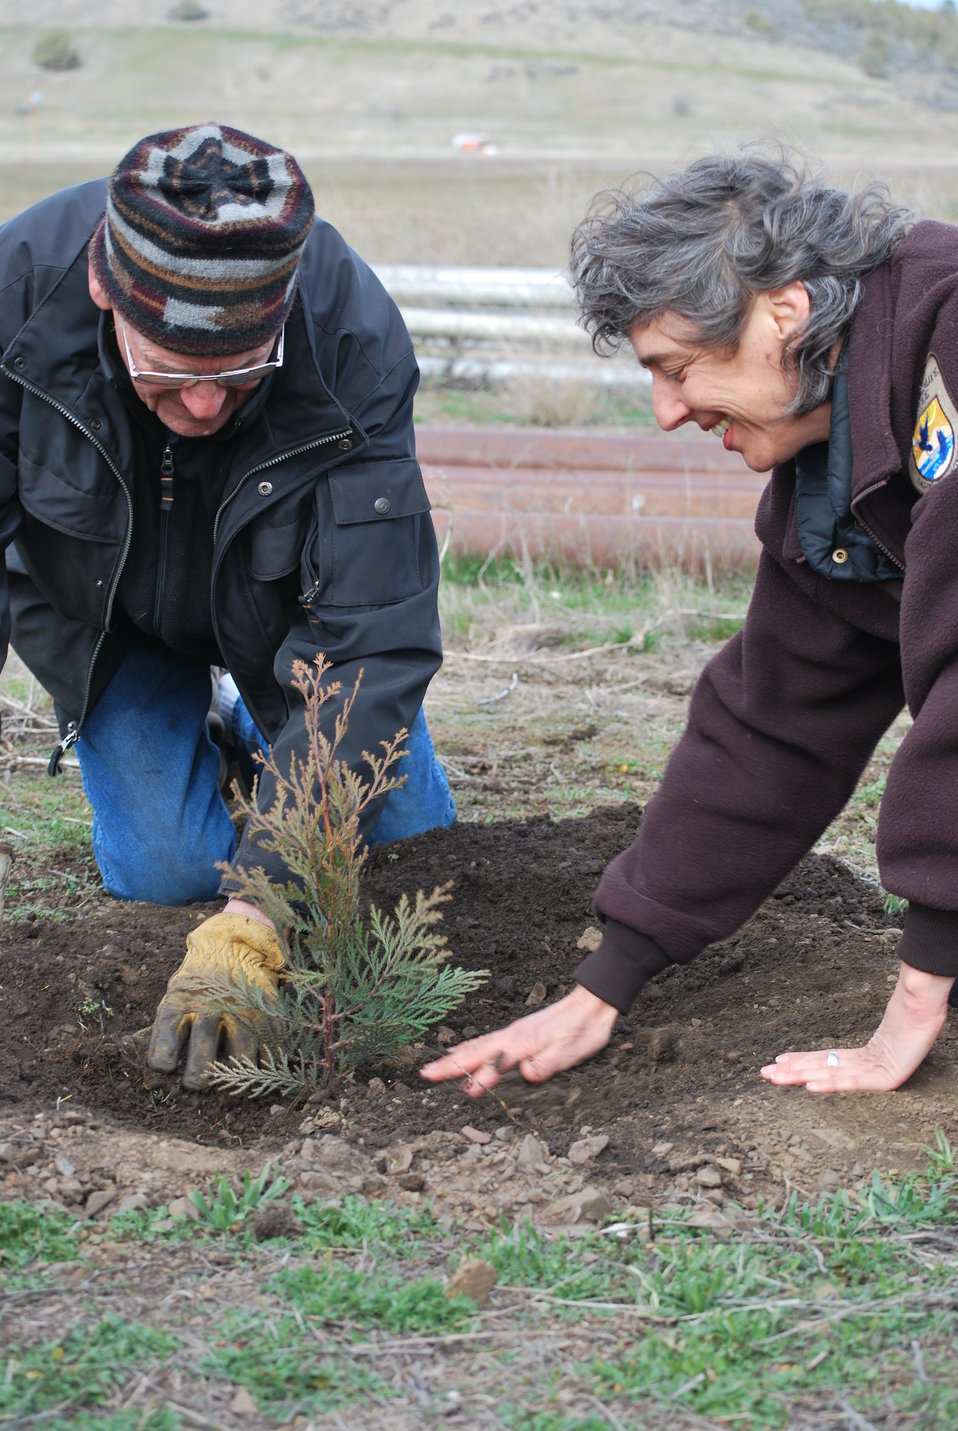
Land-owner Driven Restoration

Keith Whipple, a landowner in the Scott River valley of northern California plants a tree with Partners for Fish and Wildlife Biologist Jennifer Silveira.